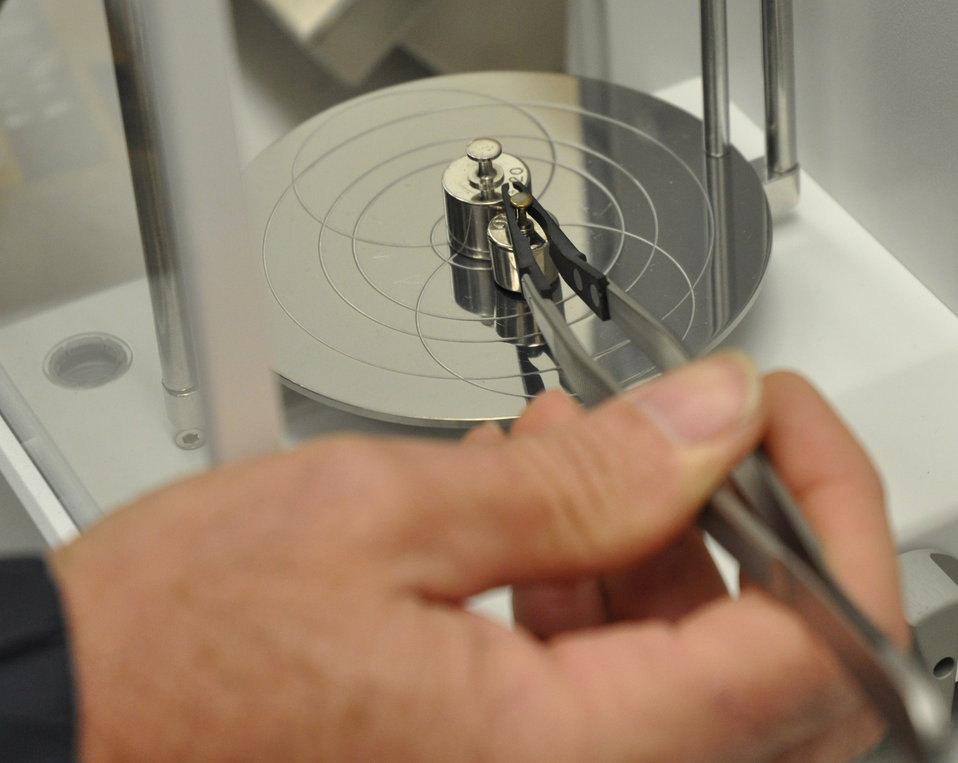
Precision: Everyday standard at base lab

A 46th Maintenance Squadron Precision Measurement Equipment Laboratory technician at Eglin Air Force Base, Fla., verifies the scales that are used within the lab to calibrate equipment have maintained their proper accuracy. Gram weights have to be handled with tools or while wearing gloves to ensure they don't change in weight due to skin oils or small debris.